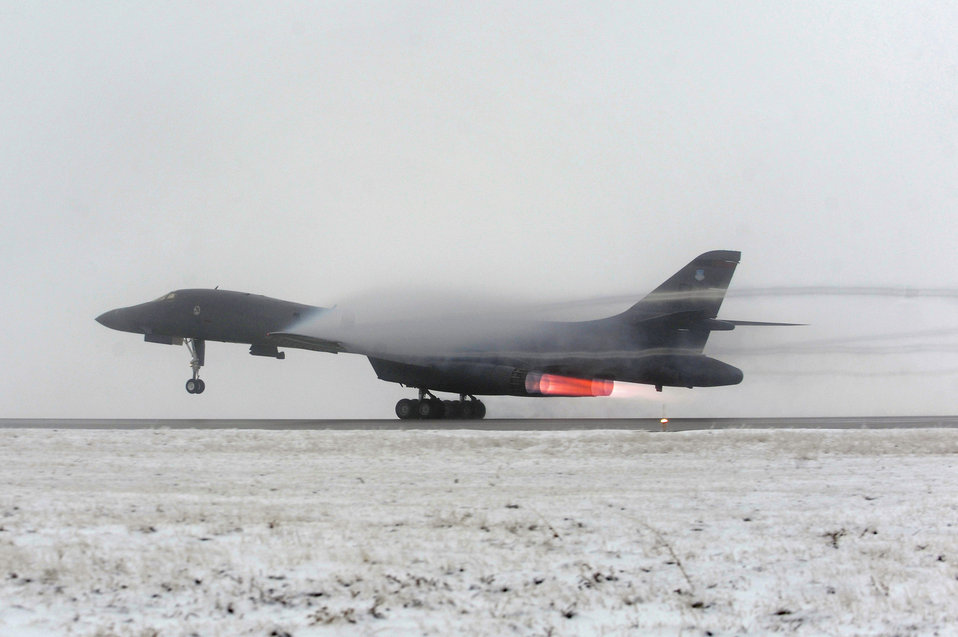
Preparing B-1B for mission

A B-1B Lancer takes off in support Operation Odyssey Dawn from Ellsworth Air Force Base, S.D., March 27, 2011. This mission marked the first time the B-1 fleet has launched combat sorties from the continental United States to strike targets overseas.